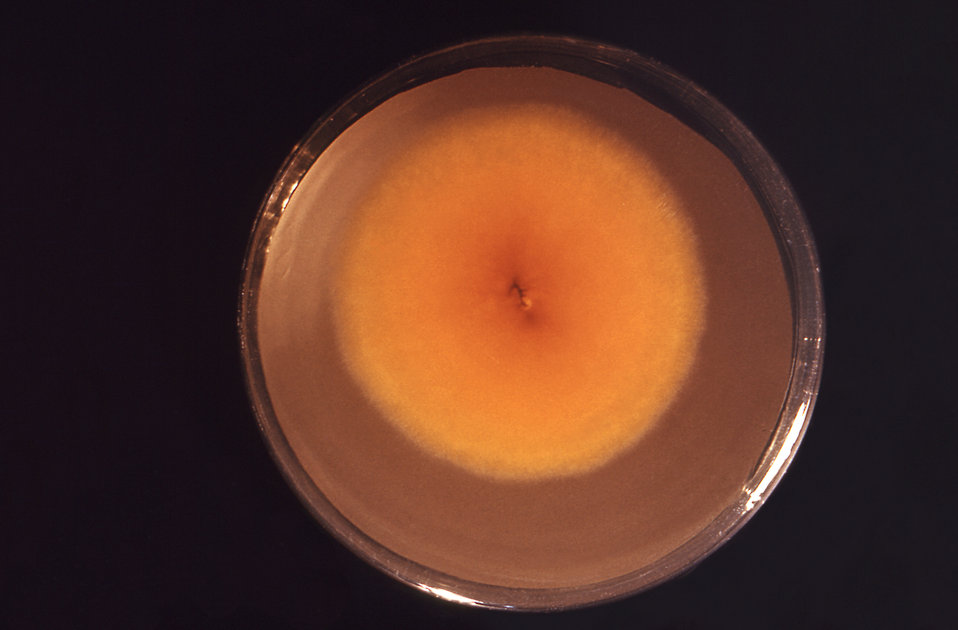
This is a reverse view, i.e., viewed from behind, of a Petri dish culture plate that had cultivated a large colony of the dermatophytic fungus, Trichophyton mentagrophytes var. nodulare, which exhibited a red-orange coloration. From the front, T. mentagrophytes colonial coloration ranges from white to bright yellowish-beige, to red-violet.